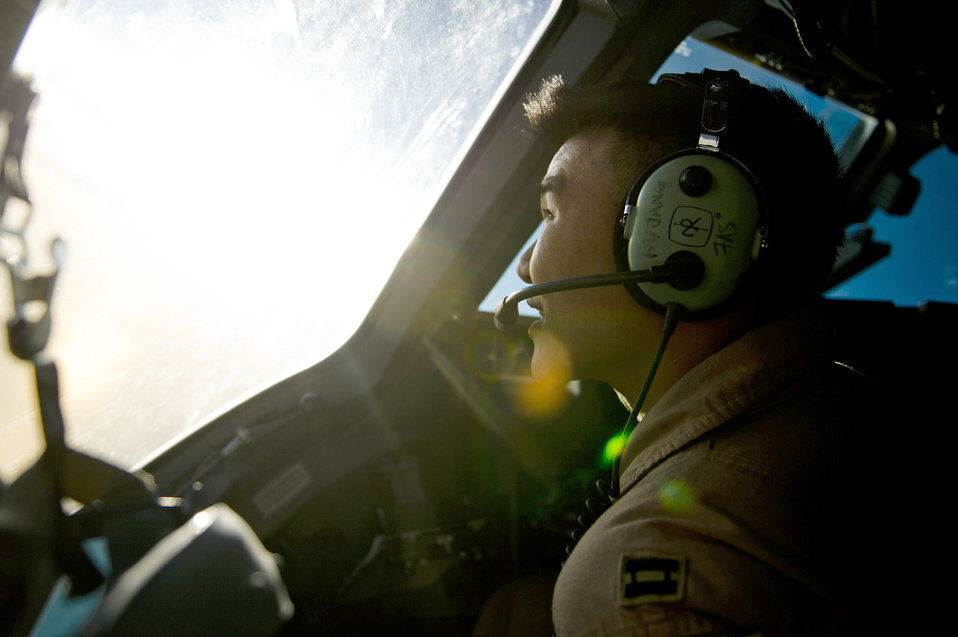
Air delivery mission

Capt. Raymond Jang flies a C-17 Globemaster III during an aerial delivery mission April 15, 2011, above Afghanistan. Captain Jang is assigned to the 816th Expeditionary Airlift Squadron.